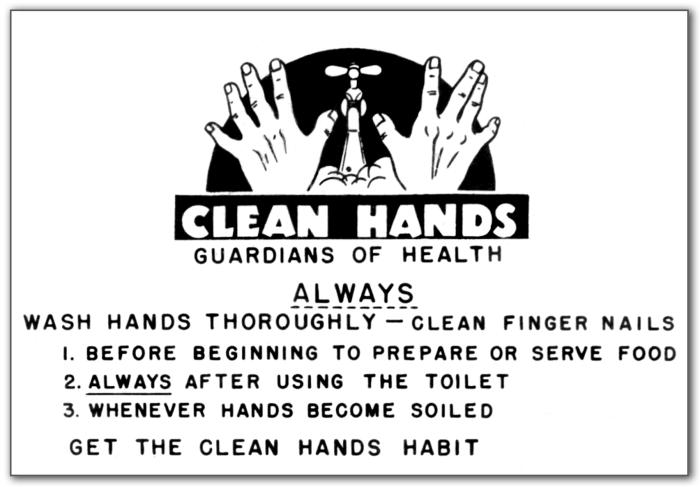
This historic sign was created by the Minnesota Department of Health in the 1930s admonishing food service workers to wash their hands frequently. It was part of a campaign to reduce food-borne illnesses.